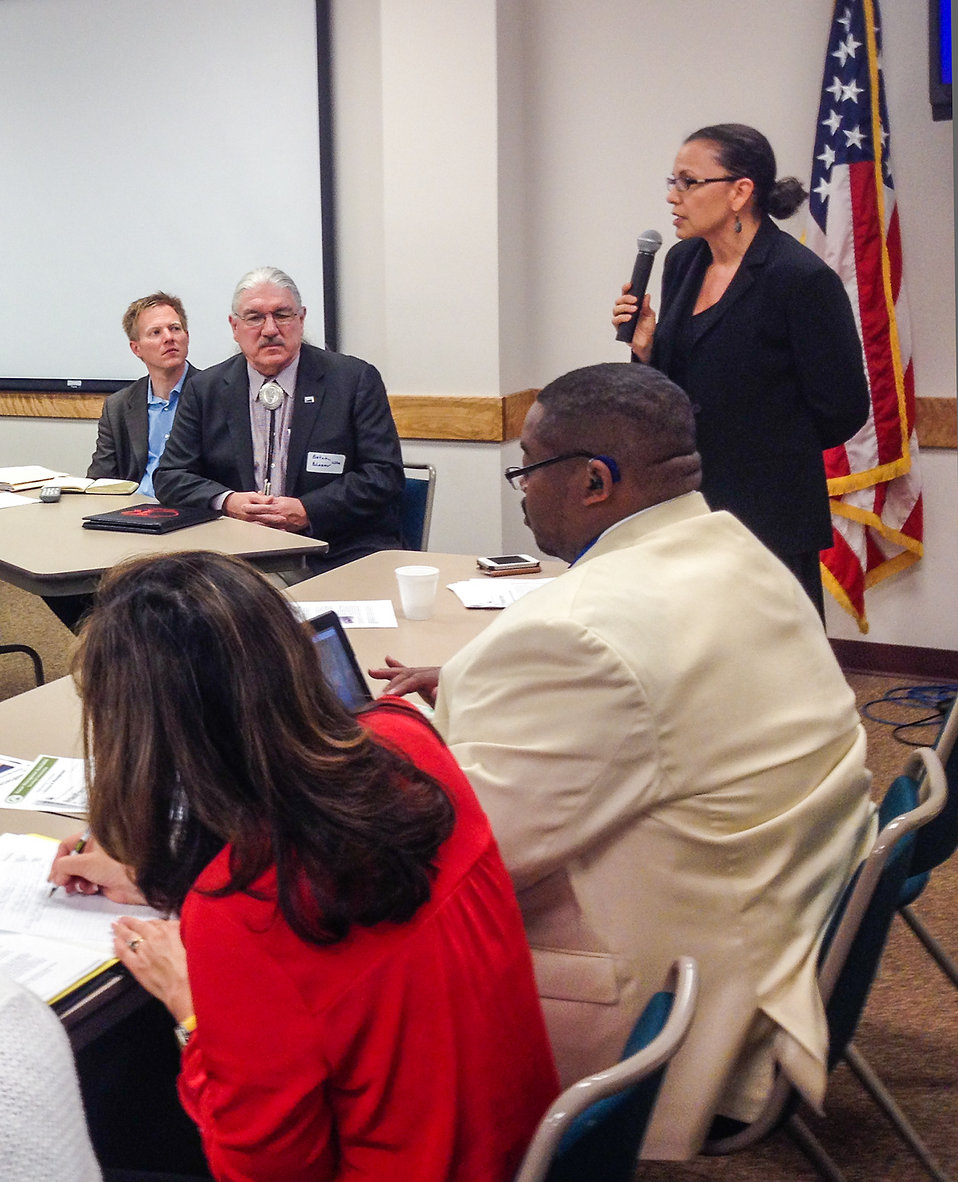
Jodi Wayne M

(L to R seated) U.S. Department of Agriculture’s (USDA) StrikeForce Coordinator Max Finberg and USDA Natural Resource and Environment (NRE) Deputy Under Secretary Butch Blazer listen to White House Senior Policy Advisor for Native American Affairs Jodi Gillette speak at USDA’s StrikeForce for Rural Growth and Opportunity Initiative in southwestern Colorado on May 2, 2013. Rural and tribal stakeholders from the Four Corners region met at the San Juan National Forest Headquarters in Colorado to discuss strategies to help USDA deliver its programs more successfully in persistently poor rural areas.